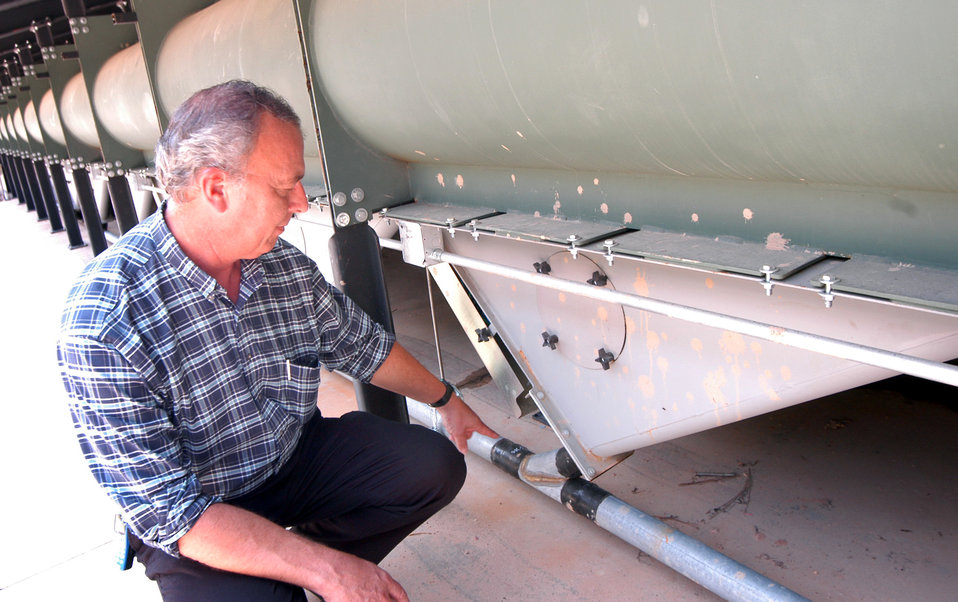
Retrieval system

ROBINS AIR FORCE BASE, Ga. -- Jim Reese checks out the new lead retrieval system at the base's small-arms range. The steel-bullet trap will collect several hundred thousand rounds of lead annually. Mr. Reese is the pollution prevention environmental engineer for Warner Robins Air Logistics Center here.